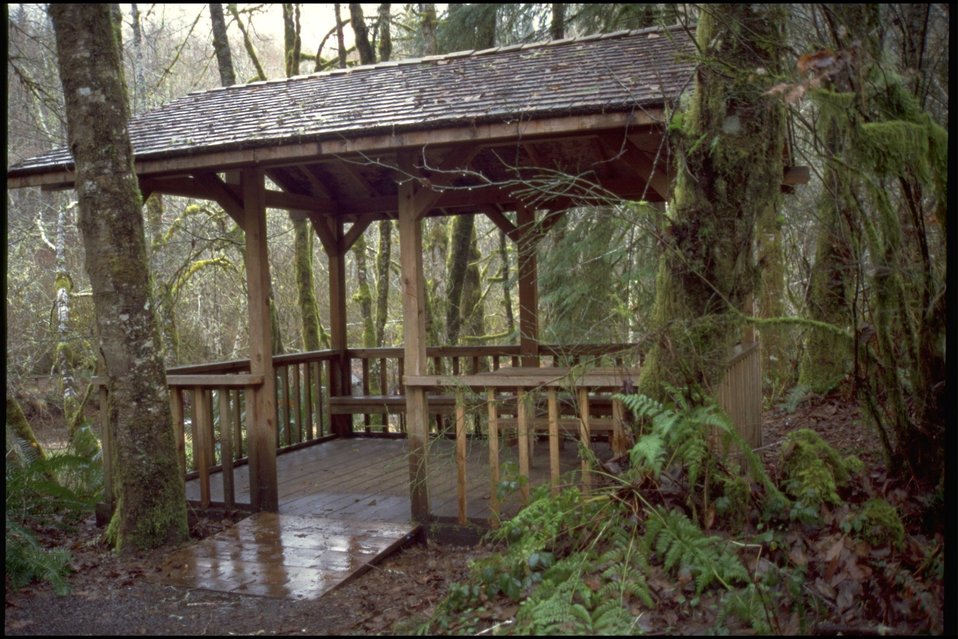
Whittaker Creek.